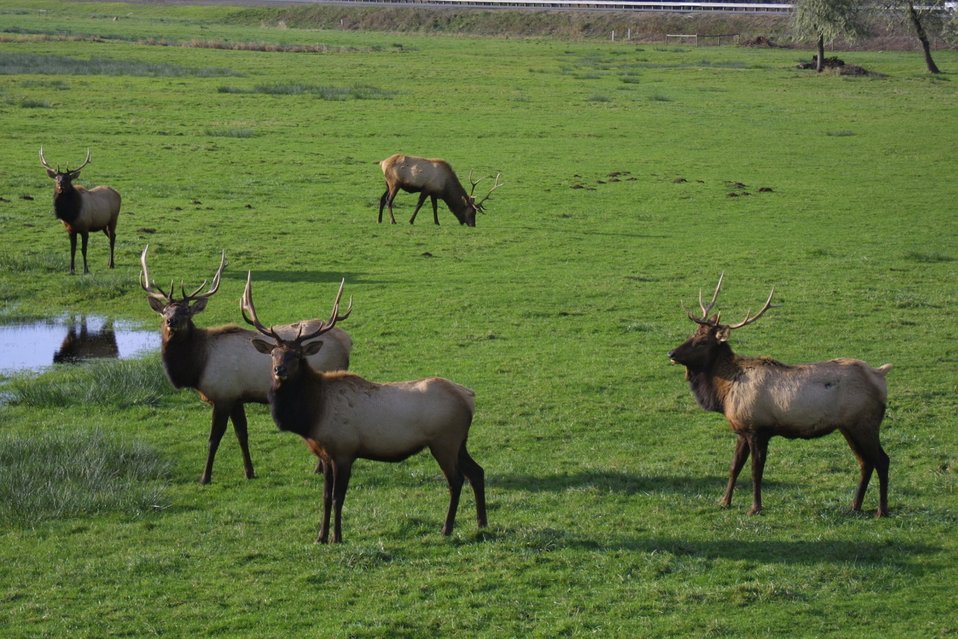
Elk at the Dean Creek Watchable Wildlife site near Reedsport, Oregon.